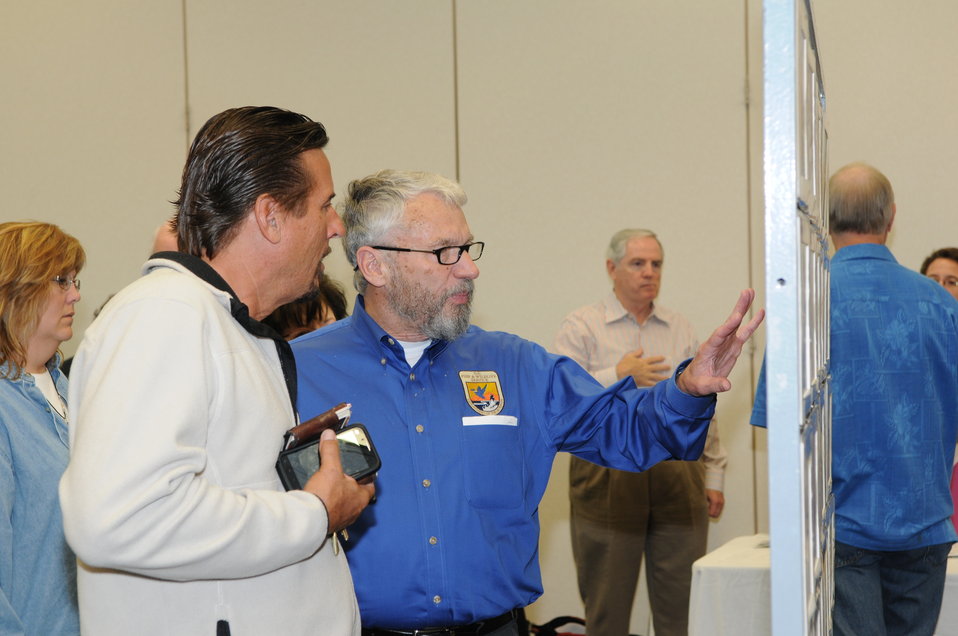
USFWS Deputy Director Rowan Gould examines artwork on the second day of judging